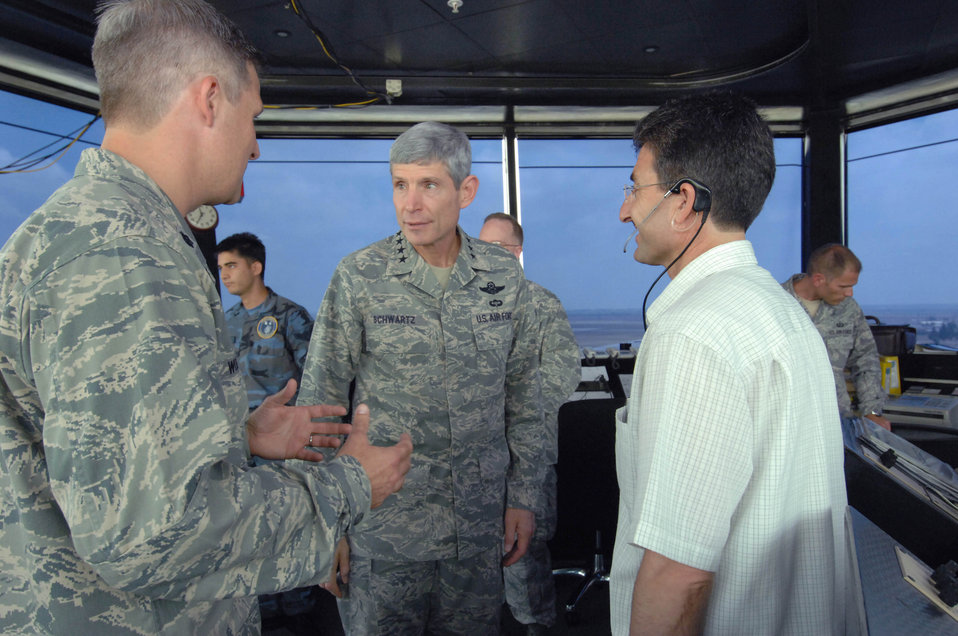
CSAF visits Incirlik

Lt. Col. Bryan Wolford and Hudaverdi Goren brief Air Force Chief of Staff Gen. Norton Schwartz July 21, 2010, at Incirlik Air Base, Turkey. The Air Force's top uniformed officer toured work areas, visited with Airmen around the base and addressed issues affecting the Air Force with more than 500 Airmen during an all call. Colonel Wolford is the 39th Operations Squadron commander. Mr. Goren is a 39th Operations Squadron interpreter.